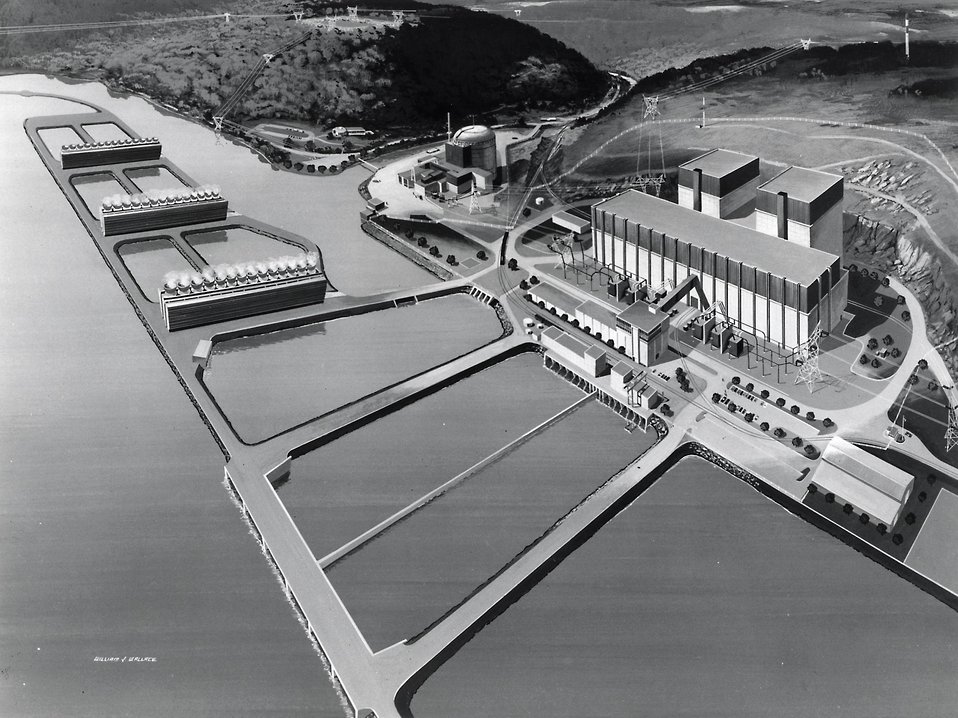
Artist's concept of Peach Bottom Atomic Power Station. Unit 1, in the background, started operation in 1966. Circa 1970.